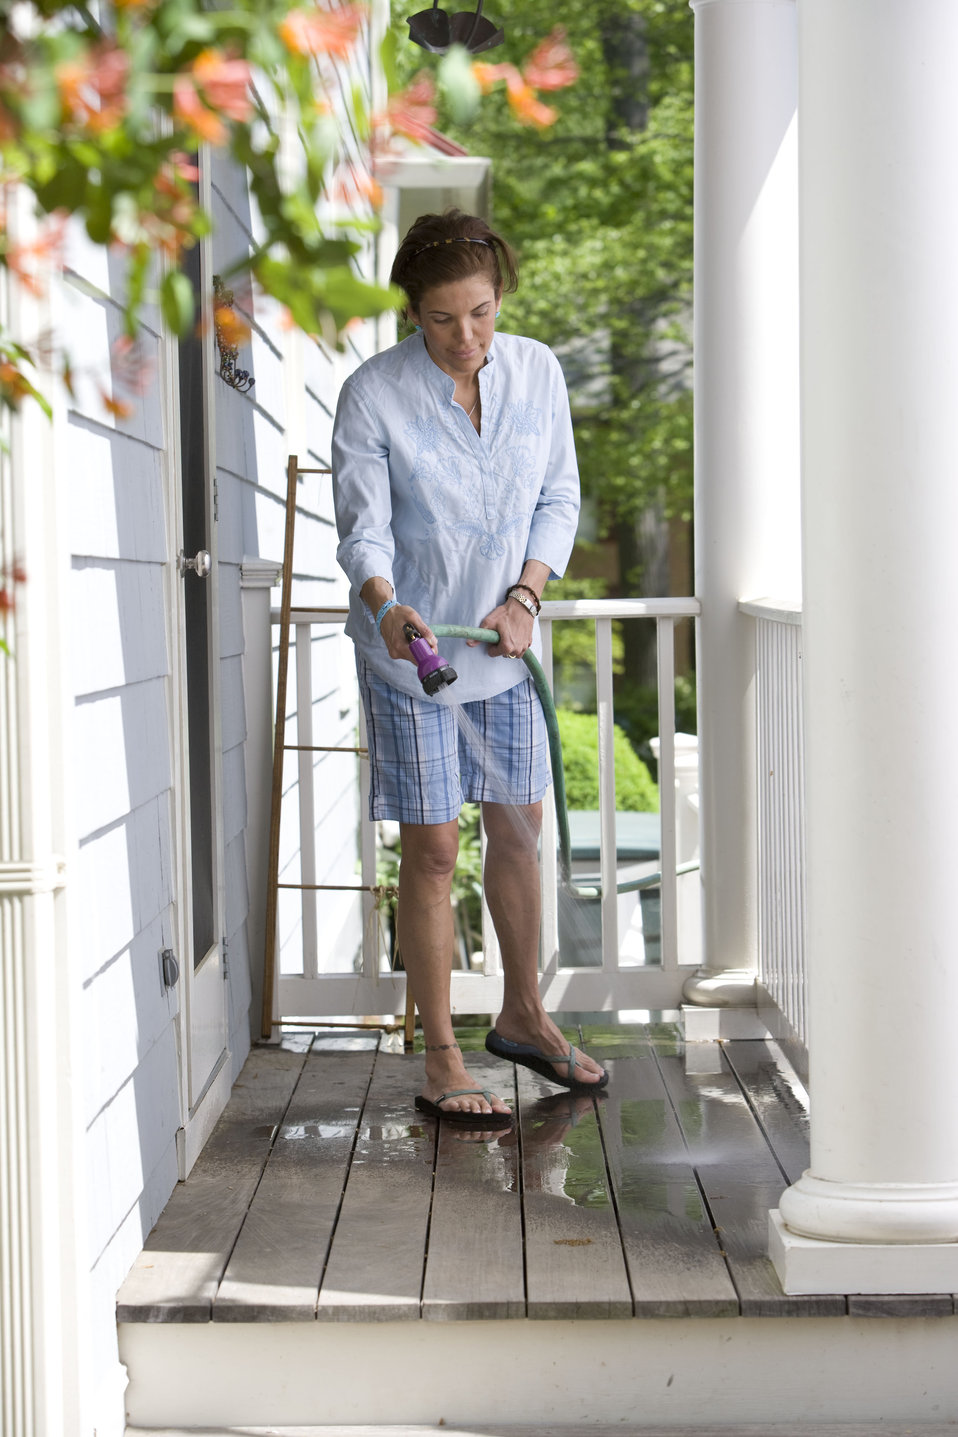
Home maintenance includes both the indoor, and as was the case here, outdoor environment, and is an ongoing process with which a homeowner need to keep up in order to provide for a healthy living space. Keeping your porch dust free reduces the amount of contaminants tracked into the house.